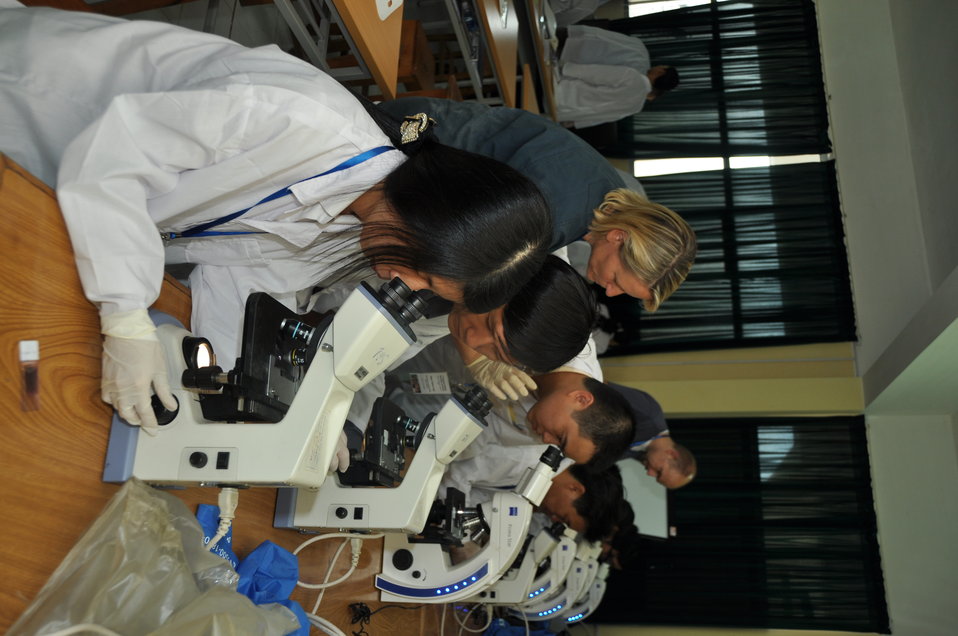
USAID EPT Smithsonian Pathology Training to Detect Emerging Infectious Diseases Wildlife and Other Animals in Vietnam Workshop